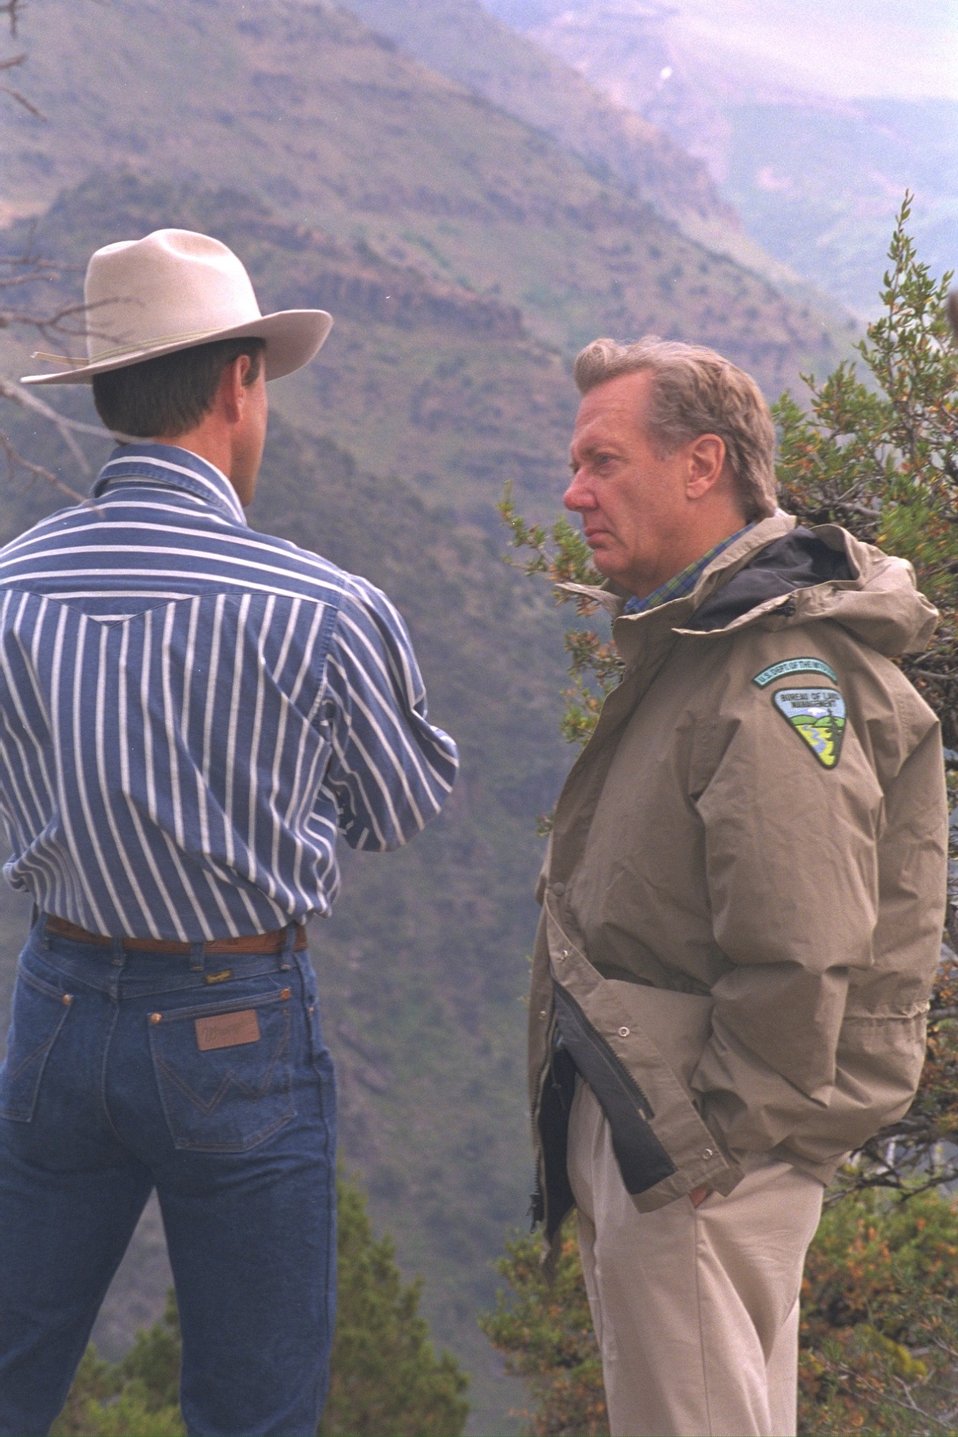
Stacie Davies and Secretary Babbitt on Steens Mountain.